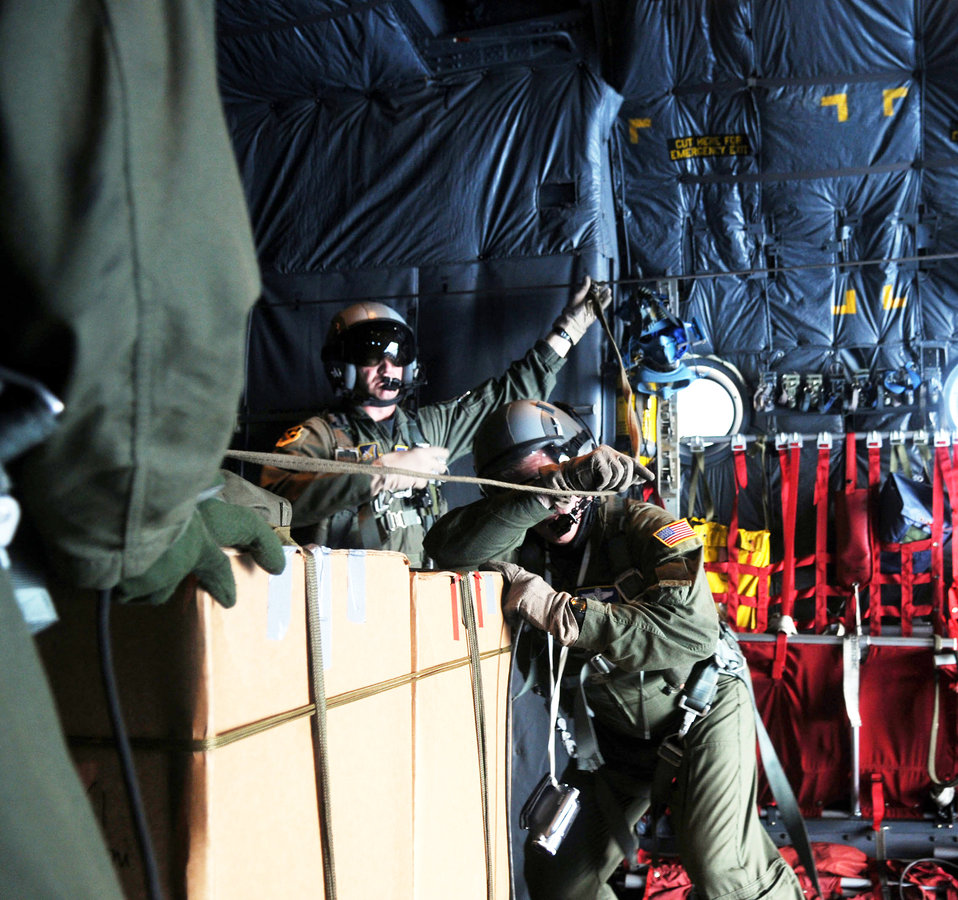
Airmen drop donated goods to islanders

Airmen from the 36th Airlift Squadron prepare a pallet of boxed donations to be airdropped on the Chuuk Islands as part of Operation Christmas Drop Dec. 16, 2009. Operation Christmas Drop began in 1952. Airmen today continue the tradition delivering supplies to remote islands of Yap, Palau, Chuuk and Pohnpei.